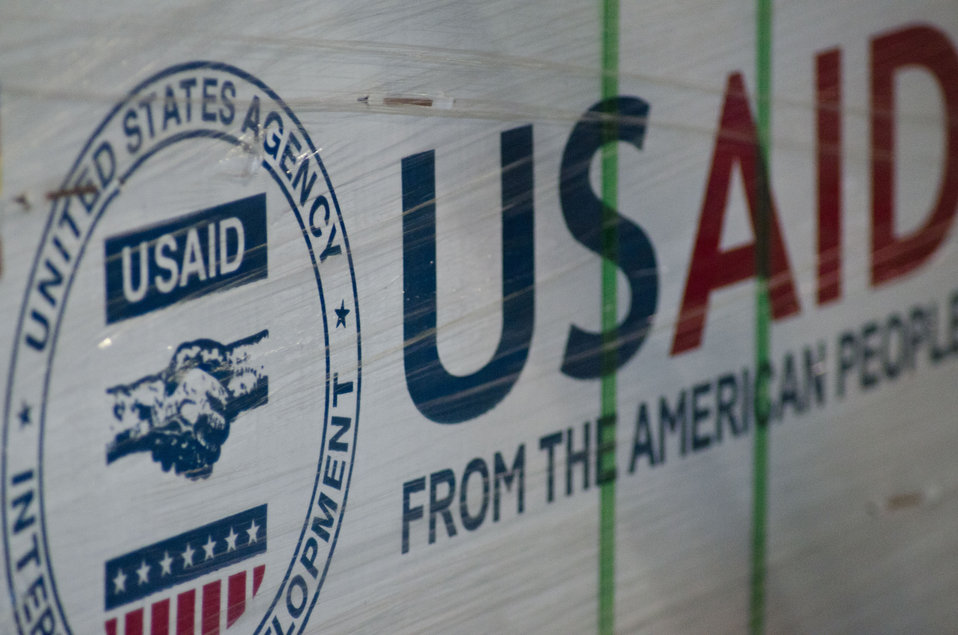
Crowley Logistics in Miami, FL on Friday, August 26, 2011 is one of three U.S. Agency for International Development (USAID) shipping and logistics facilities in the nation. In times of emergency humanitarian relief aid, they can respond with supplies delivered to aircraft at Miami International Airport within two hours. They utilize articulating forklifts, which hinge in the middle to store and retrieve pallets of supplies through narrow aisle ways. This allows for a higher density of stored supplies in the warehouse. Pallets of supplies are stacked three levels high. USAID provides humanitarian assistance through the Office of U.S. Foreign Disaster Assistance (OFDA). OFDA is the lead U.S. Government (USG) office charged with providing and coordinating USG humanitarian assistance in response to international emergencies and disasters. To achieve this, USAID works in cooperation with other USG offices such as the U.S. Department of Agriculture (USDA), and international humanitarian experts. The USDA provides food assistance to support emergency feeding programs in countries experiencing food shortages due to drought and civil conflict.